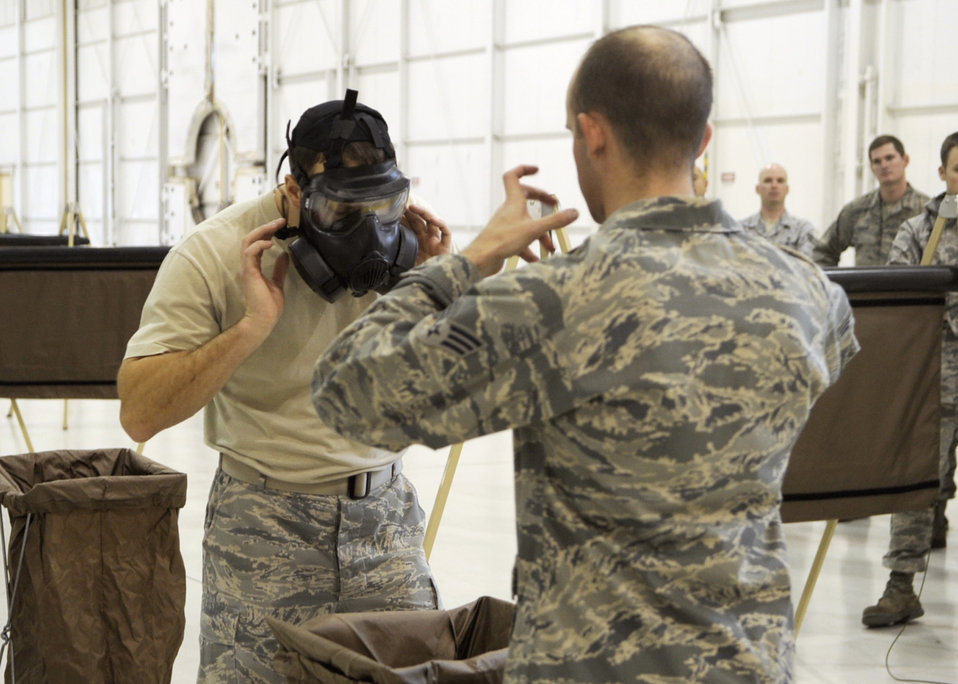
ATSO rodeo prepares Airmen for exercises, deployments

Senior Airman David Kandziolka demonstrates how to properly remove his simulated contaminated gas mask to Staff Sgt. Troy Zimmerman Dec. 13, 2010, at Mountain Home Air Force Base, Idaho, during an ability to survive and operate rodeo. The ATSO rodeo helped increase the critical real-world and phase II ATSO skills through combined academic and practical stations. Airman Kandziolka and Sergeant Zimmerman are assigned to the 366th Civil Engineer Squadron.